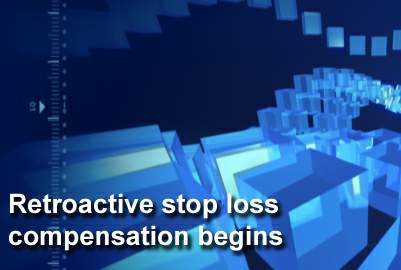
Stop loss Airmen eligible for compensation

Current and former Airmen who were involuntarily held on active duty beyond an approved separation or retirement date as a direct result of stop loss between Sept. 11, 2001, and Sept. 30, 2009, may be eligible for a Retroactive Stop Loss Special Pay compensation of $500 for each month they were affected. Affected Airmen may start applying for compensation Oct. 21.